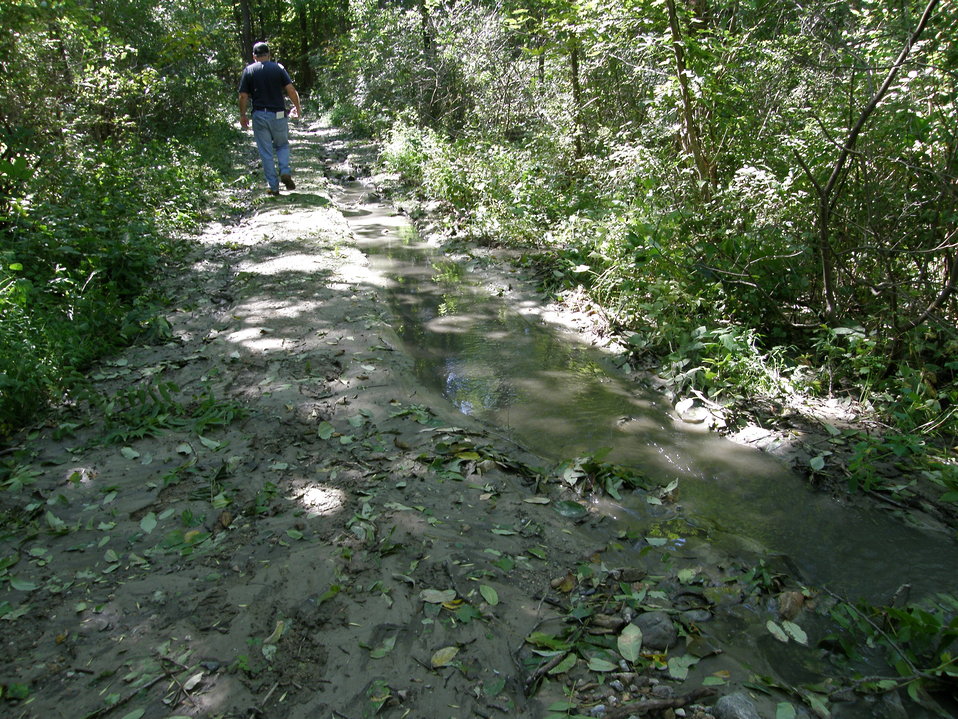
Hurricane Damage at Wallkill River National Wildlife Refuge August 30, 2011

Damage to Dagmar Dale Trail, Sussex, NJ.